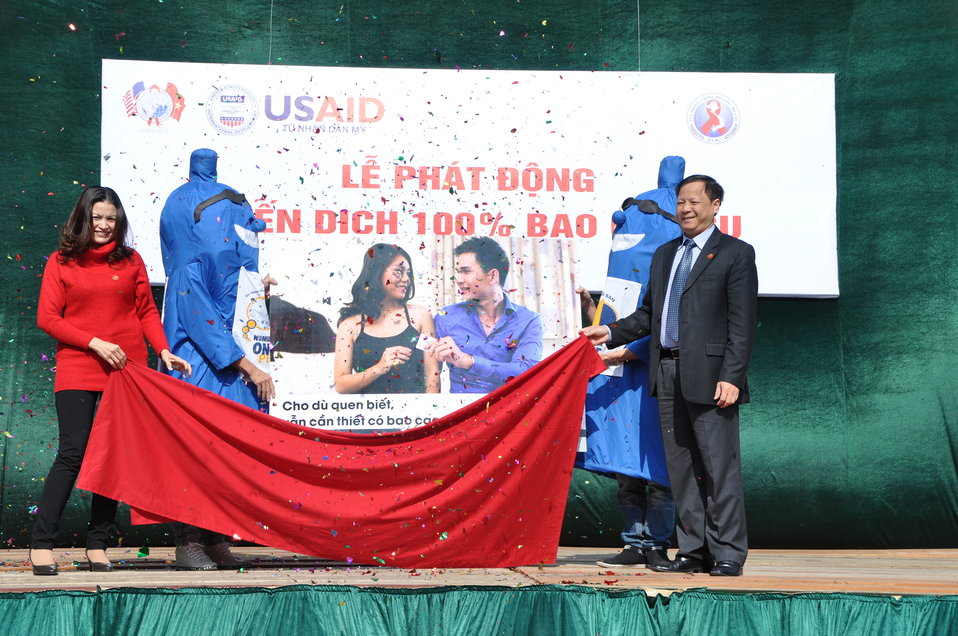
100% Condom Use Campaign Launch, Dec. 2, 2011